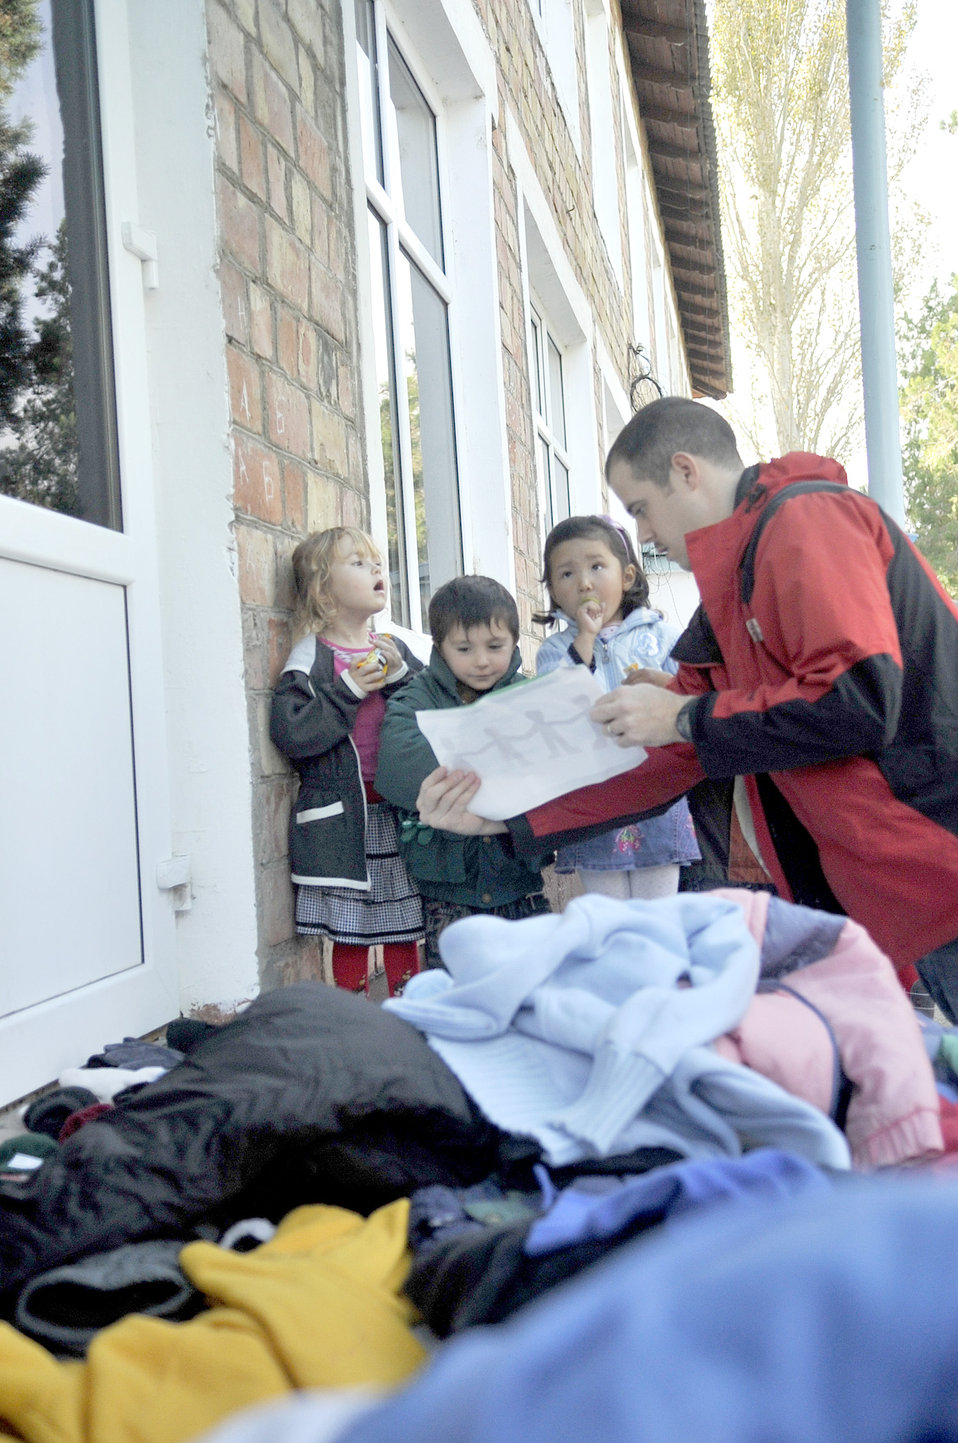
Kyrgyzstan school

1st Lt. Mike Capelle unfolds a picture drawn by a student at Michael Anderson Elementary School Oct. 18, 2010, for kids at the Solnyshko school near Vasilievka, Kyrgyzstan. Several Airmen who are deployed to the Manas Transit Center, Kyrgyzstan, visited the school to deliver cold weather items and spend time with the kids.